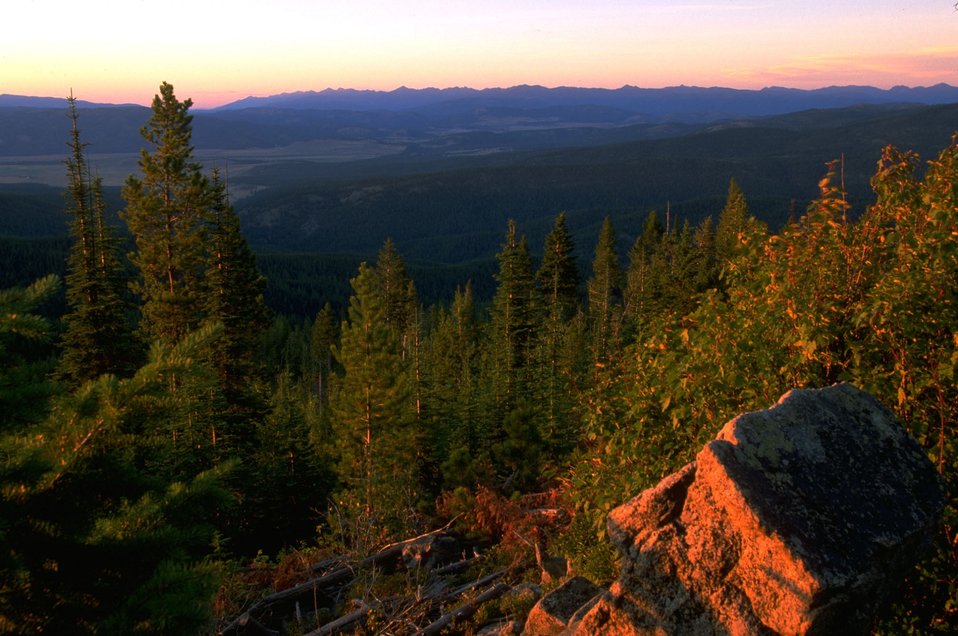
Garnet Back Country Byway view from overlook